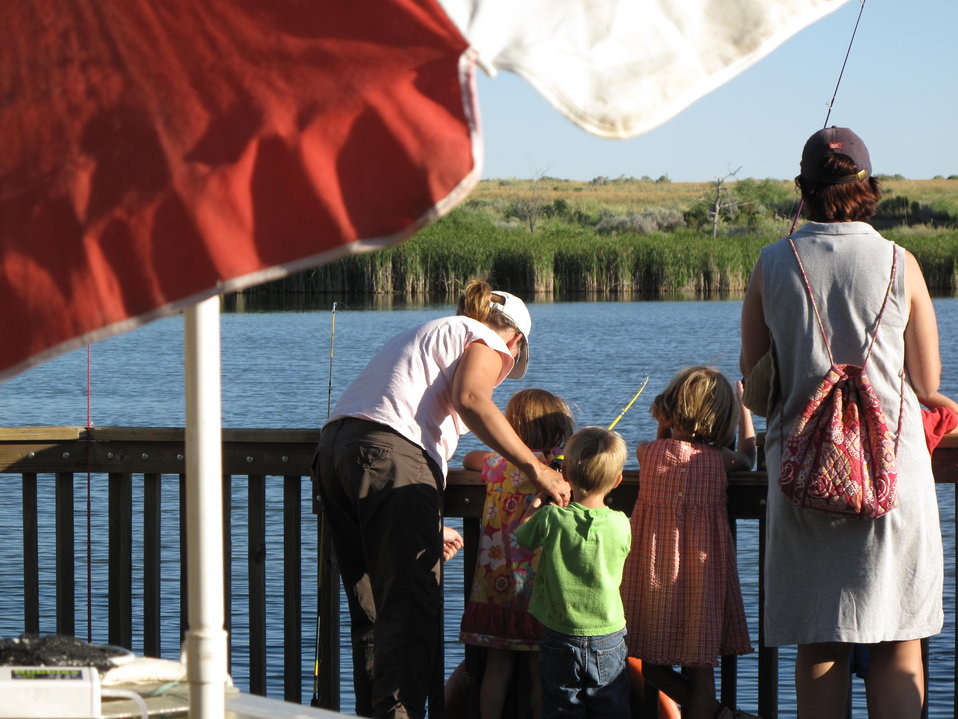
Youth Fishing at the Rocky Mountain Arsenal